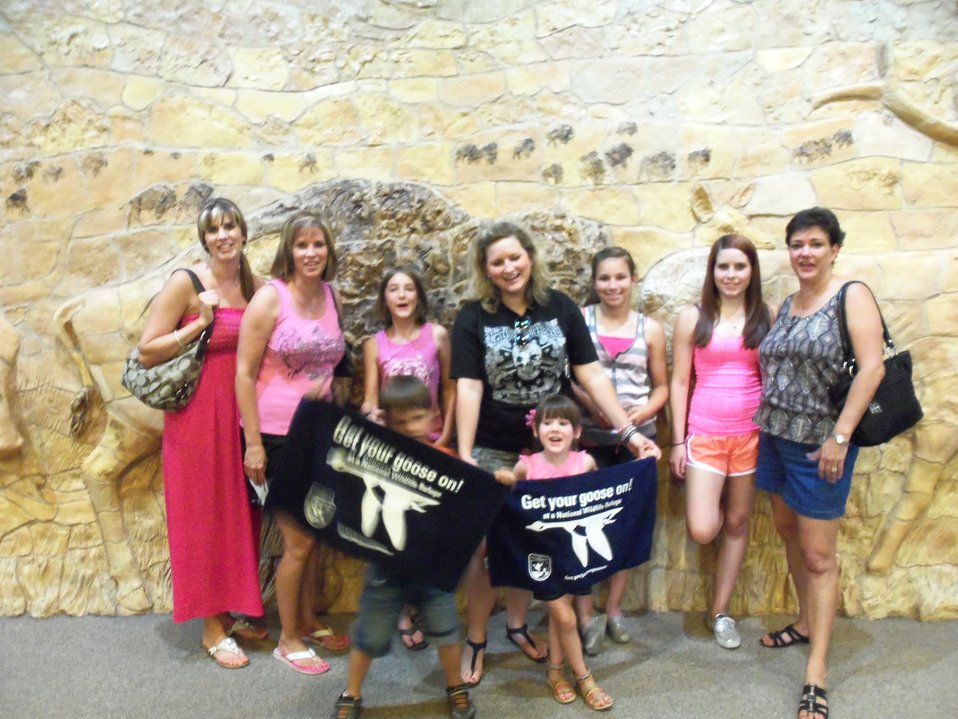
Get Your Goose On!

Wichita Mountains National Wildlife Refuge in Oklahoma.